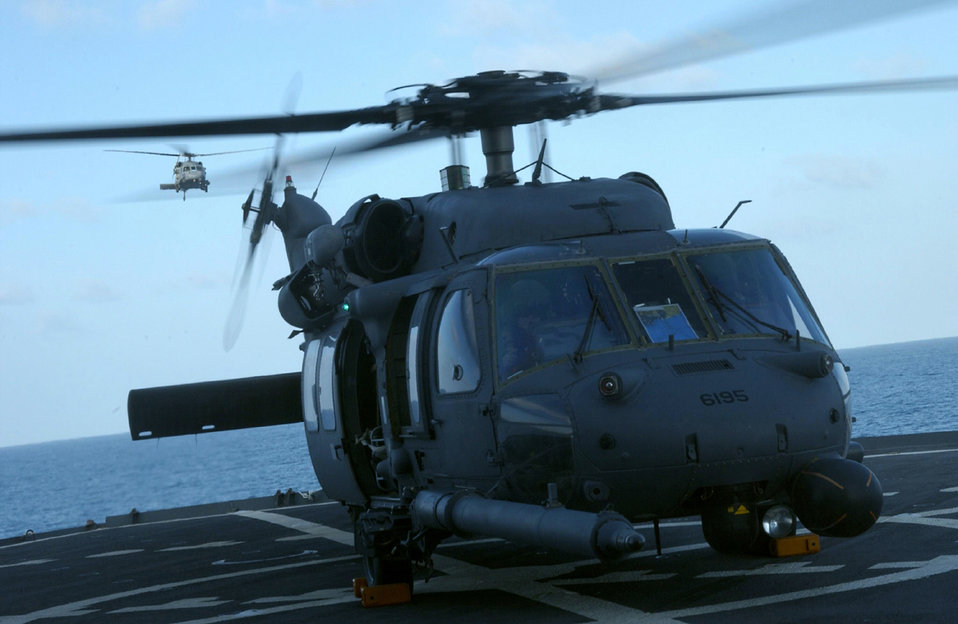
A 'chopper' landing

OVER THE PACIFIC OCEAN -- A 55th Rescue Squadron HH-60G Pave Hawk crew lands onto a Navy ship near San Diego during water-rescue training. The helicopters are based at Davis-Monthan Air Force Base, Ariz.